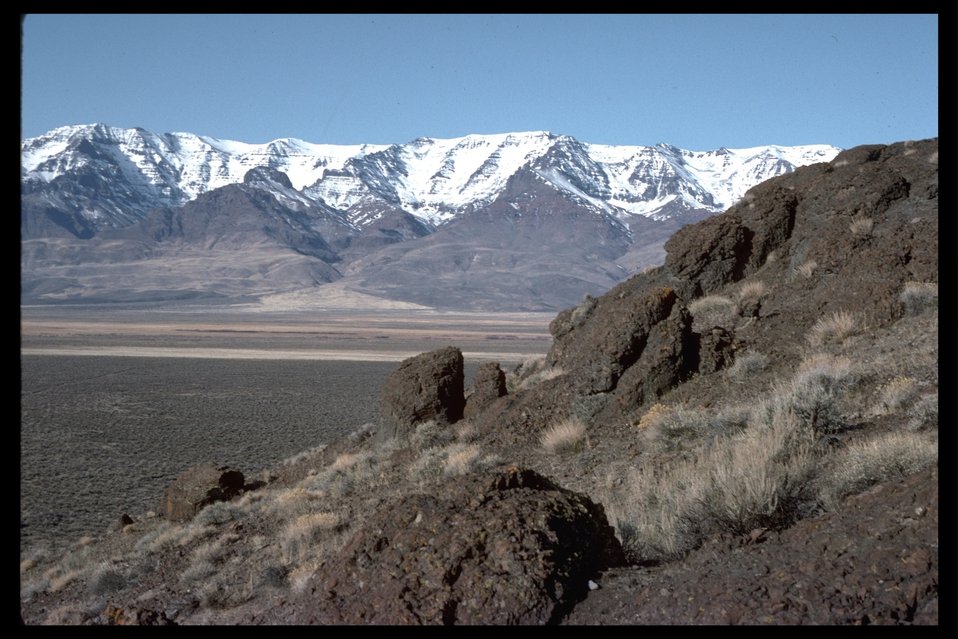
High Steens, looking at Steens escarpment from the base of Mickey Butte. (WSA 2-85F)